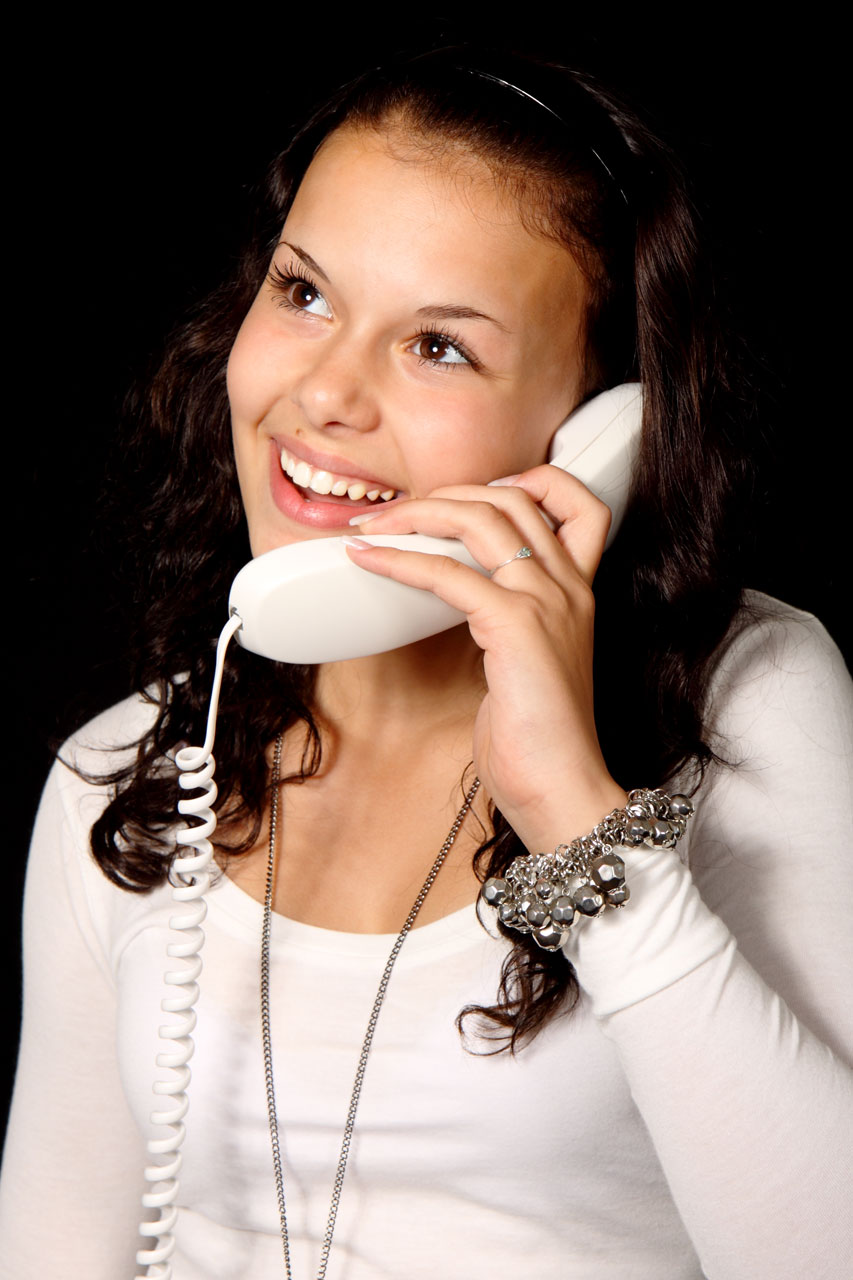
Woman with phone smiling

Young woman with telephone smiling.